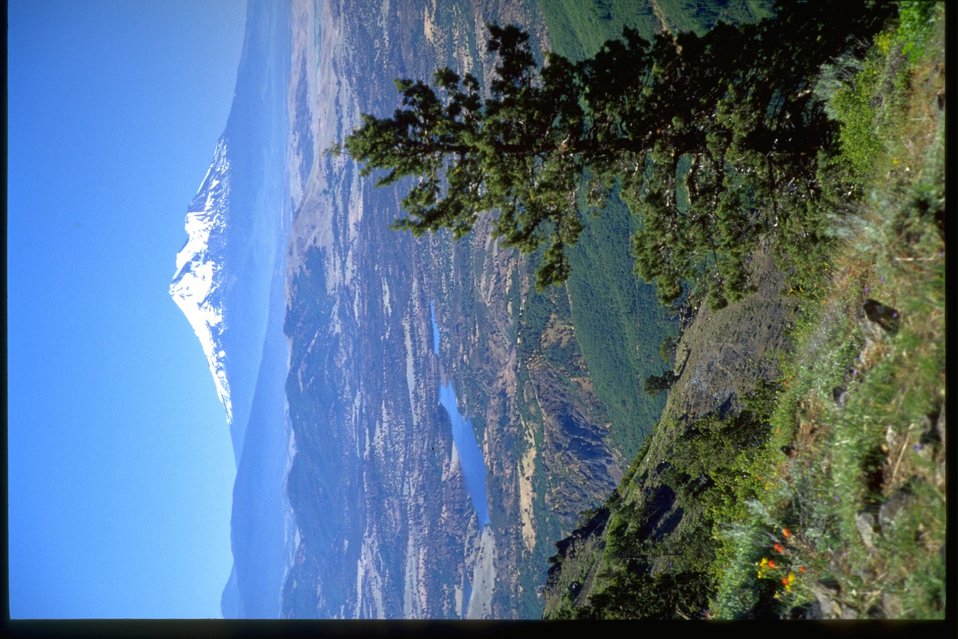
Mount Shasta and Irongate Reservoir from Boccard Point, Soda Mountain.